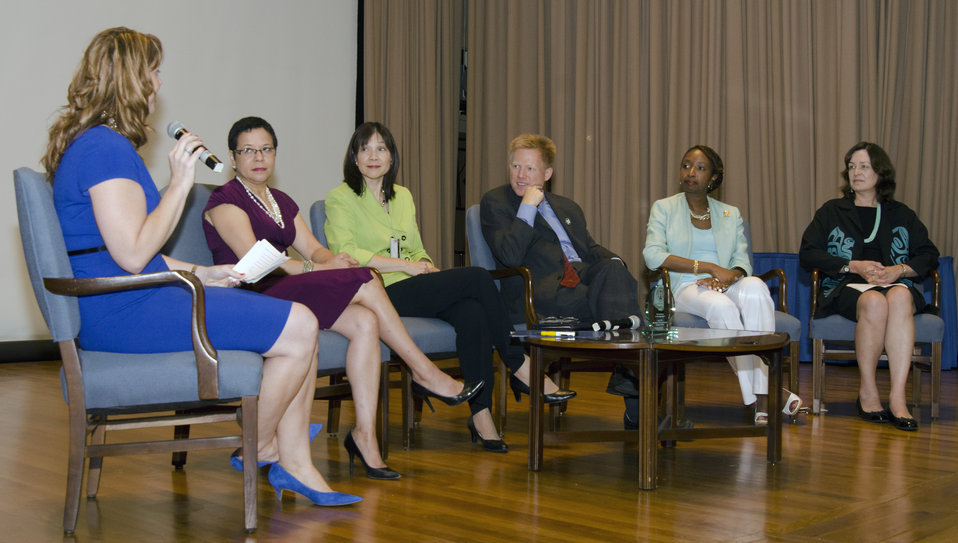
Members of the panel listen to the moderator at the Womens Equality Day ceremonies held in the Jefferson Auditorium at the U.S. Department of Agriculture (USDA) in Washington, D.C. on Thursday, Aug. 22, 2013.